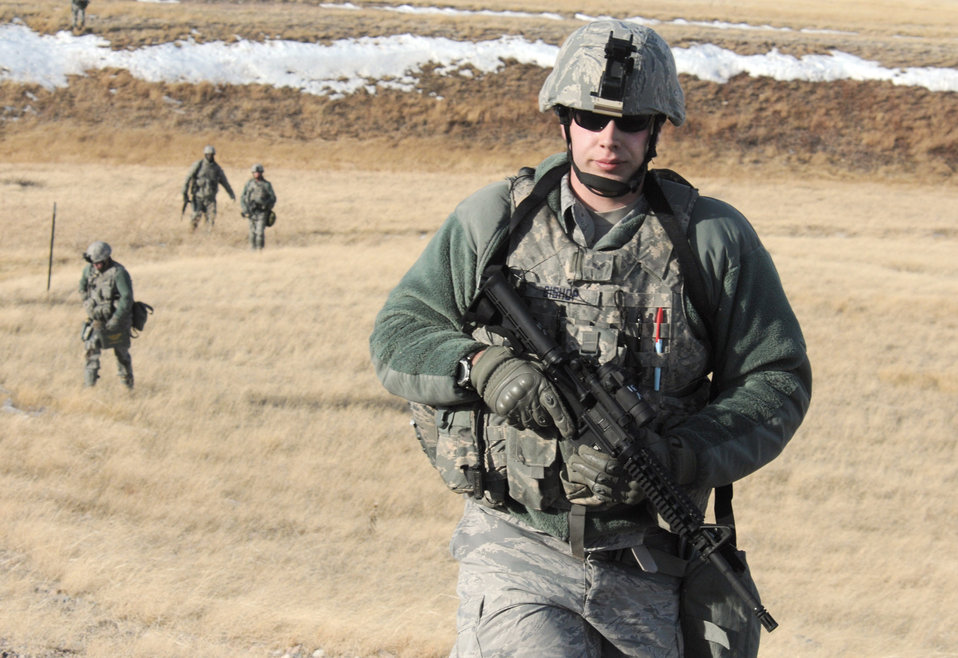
Security forces exercise

Senior Airman Grant Bishop and other members of the 90th Security Forces Group patrol during an exercise Jan. 13, 2011, at F.E. Warren Air Force Base, Wyo. Airman Bishop is assigned to the 90th Security Forces Squadron.